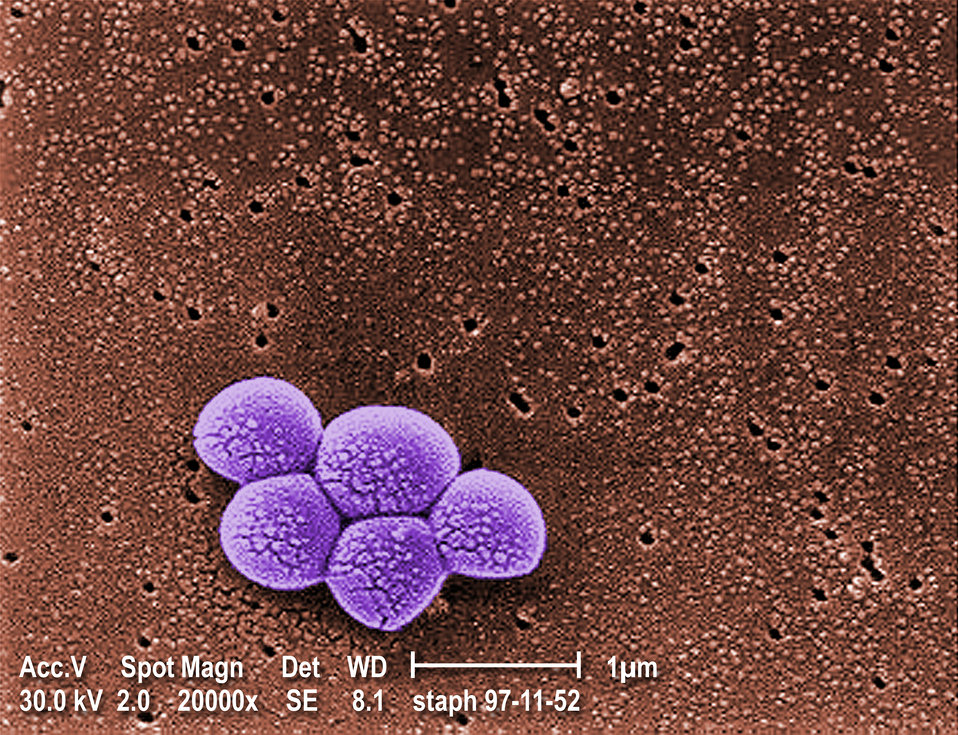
Magnified 20,000X, this colorized scanning electron micrograph (SEM) depicts a grouping of methicillin resistant Staphylococcus aureus (MRSA) bacteria. See PHIL 617 for a black and white view of this image.